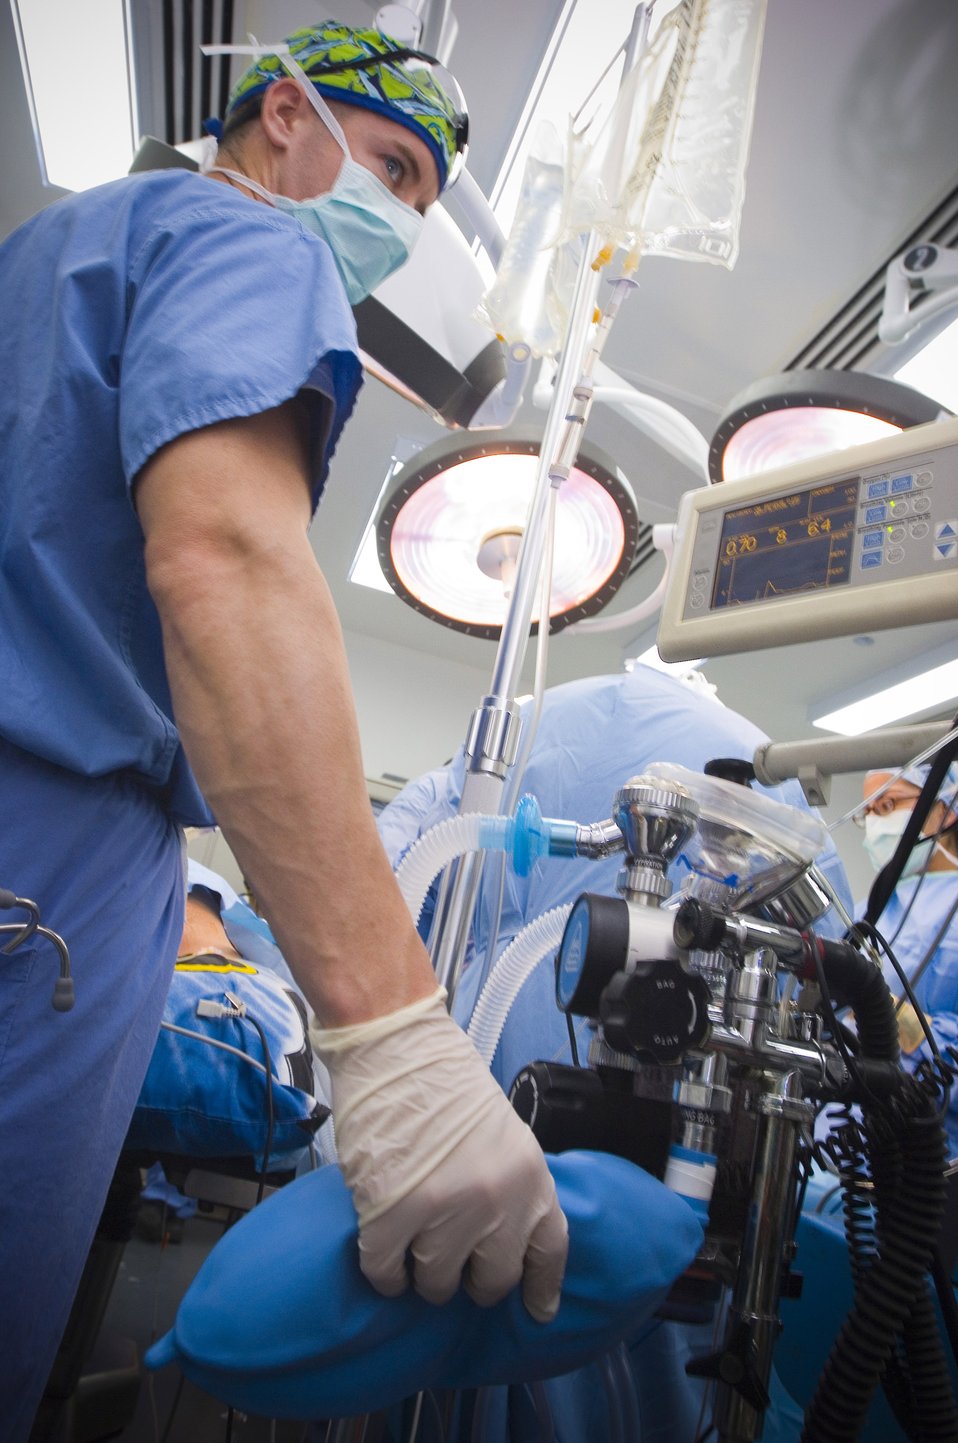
Combat Nurse anesthetist

Capt. Charlie Johnson assists with ventilation to ensure the patient's lungs are filled with oxygen at the end of a surgical procedure Dec. 4 at the Air Force Theater Hospital at Balad Air Base, Iraq. As the patient's lungs fill with oxygen, he will be gradually revived from anesthesia. Captain Johnson is a certified registered nurse anesthetist deployed from Travis Air Force Base, Calif.